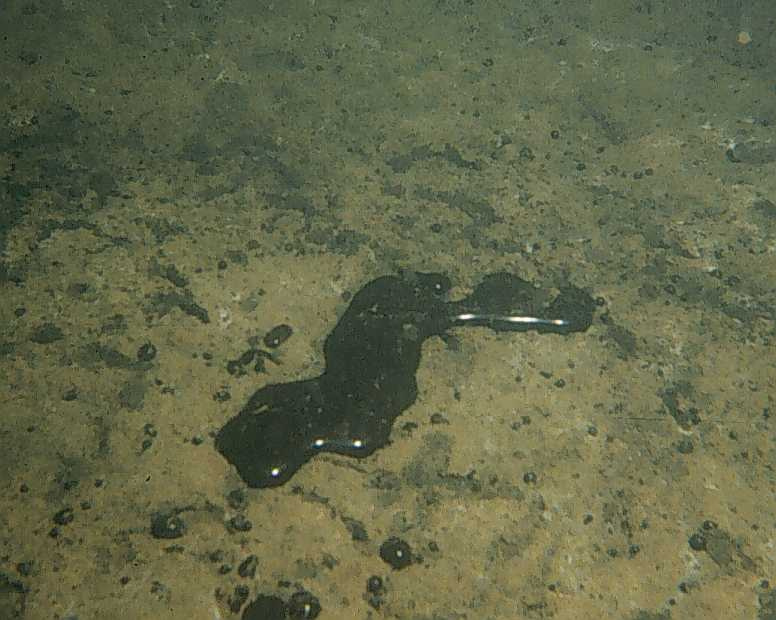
EPA Divers map pools of creosote on the bottom of Eagle Harbor

EPA Region 10 Divers mapped out pools of creosote at the Wyckoff Superfund Site that were planned for later removal.

These pools of creosote on the bottom would not mix with water and created a 'lava lamp' like effect, where divers could actually see their reflections in the chemical pools.

For more details on these dives, see: www.epa.gov/region10/pdf/diveteam/wyckoff superfund site ...
yosemite.epa.gov/r10/OEA.NSF/3cf2477404154c6988256bdc0076...

For more information about the EPA Region 10 Dive Team, visit: www.epa.gov/region10/dive Photo by Sean Sheldrake, EPA.